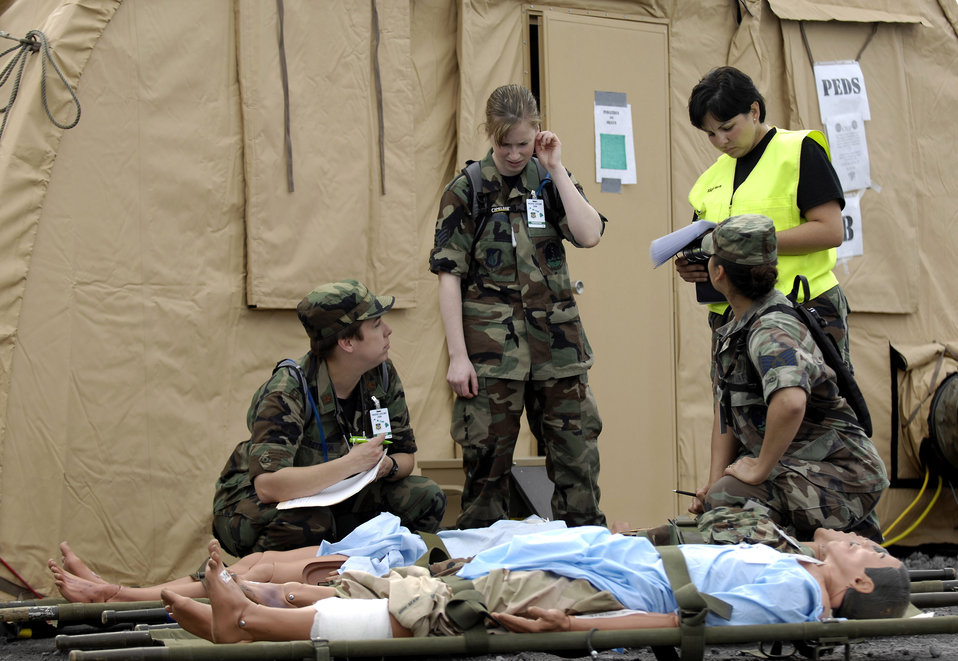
Providing a lifeline

Medics run through a patient scenario during Exercise Pacific Lifeline Feb. 5 at Kona International Airport, Hawaii. Pacific Lifeline is a total force exercise staging from three locations within the Hawaiian Islands. It provides approximately 900 Department of Defense members a test environment to rapidly deploy and provide time-critical services in the wake of a simulated natural disaster.